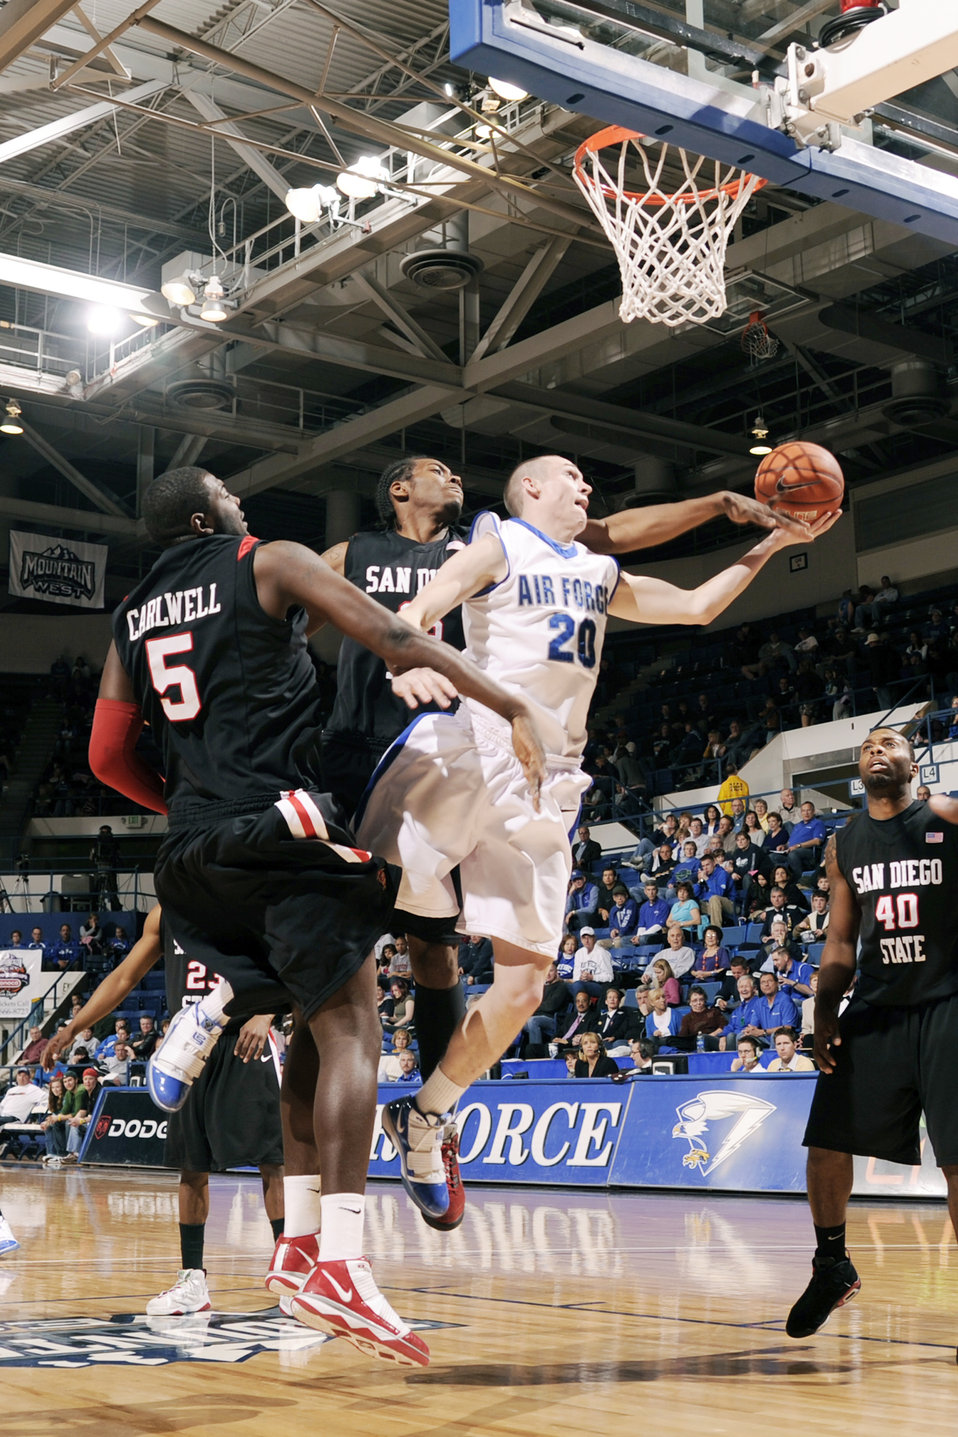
Air Force basketball falls to San Diego, 61-42.

Air Force junior Tom Fow fights to go up for a basket during the Falcon's game against San Diego March 6, 2010, at the U.S. Air Force Academy's Clune Arena in Colorado. Fow contributed 9 points for the Falcons; however the Air Force fell to San Diego 61-42.